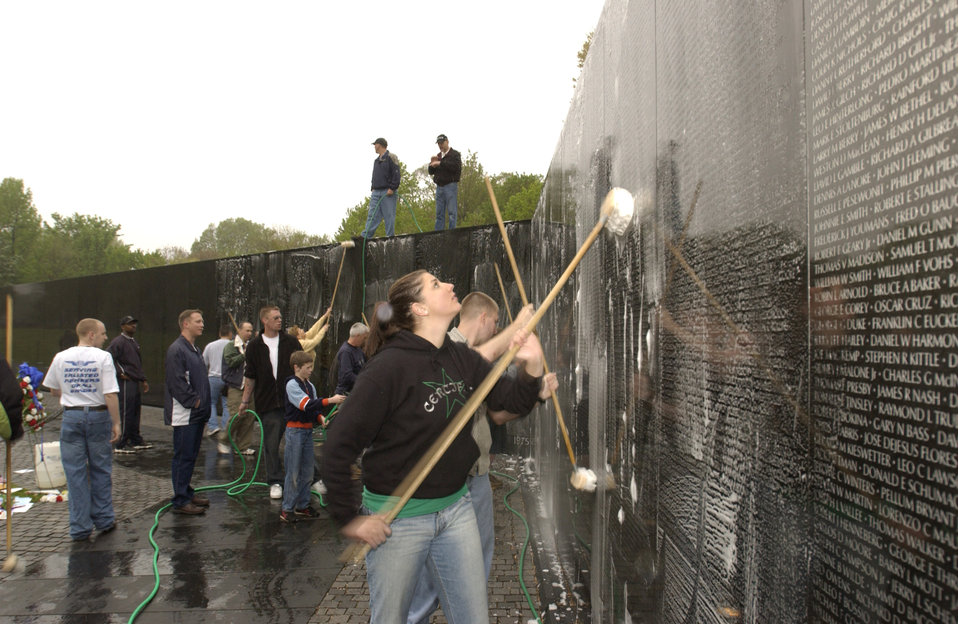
AFSA members clean Vietnam Memorial

Airman 1st Class Laura Dailey scrubs the Vietnam Veterans Memorial on Saturday, April 22, 2006. More than 140 members of the Air Force Sergeants Association met in the nation's capital to clean the memorial early in the morning before tourists arrived. Airman Dailey is assigned at Pope Air Force Base, N.C.